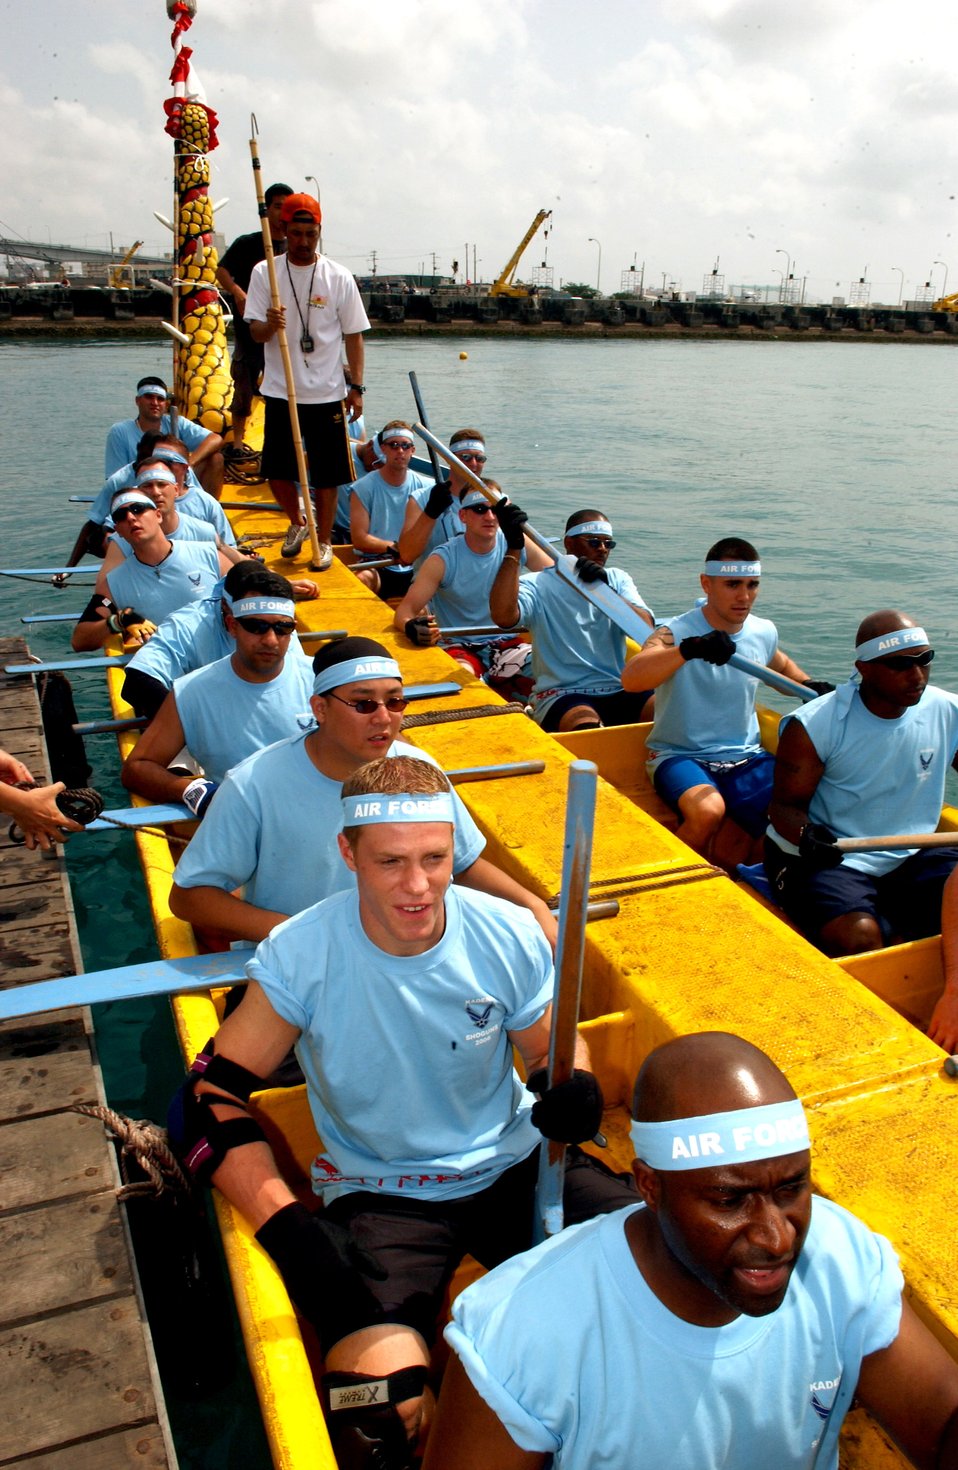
Dragon races

Airmen comprising the